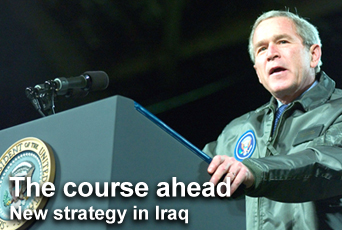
Bush outlines new strategy for course ahead in Iraq

President Bush's new strategy for Iraq includes more than 20,000 additional U.S. troops on the ground in Baghdad and Anbar province, increased responsibility for the Iraqi government and Iraqi security forces and more diplomatic and economic initiatives.